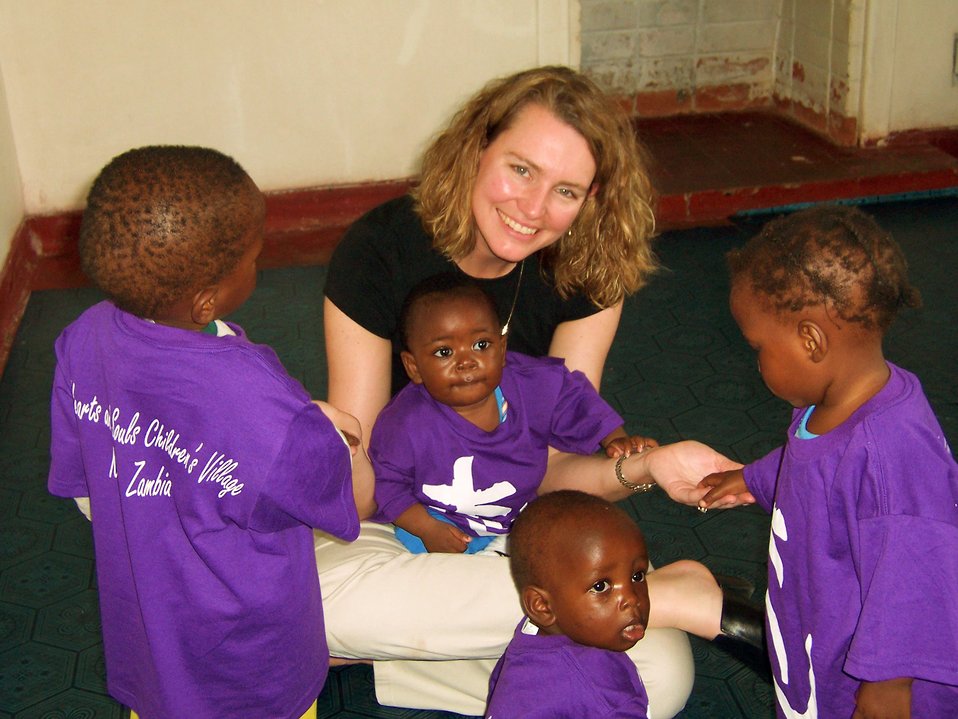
Humanitarian in action

ZAMBIA (AFPN) -- Kim Milhoan plays with children in the first AIDS orphanage. She and her husband, Lt. Col. (Dr.) Kirk Milhoan, funded two facilities here with charitable donations through non-profit organizations. Kirk Milhoan)